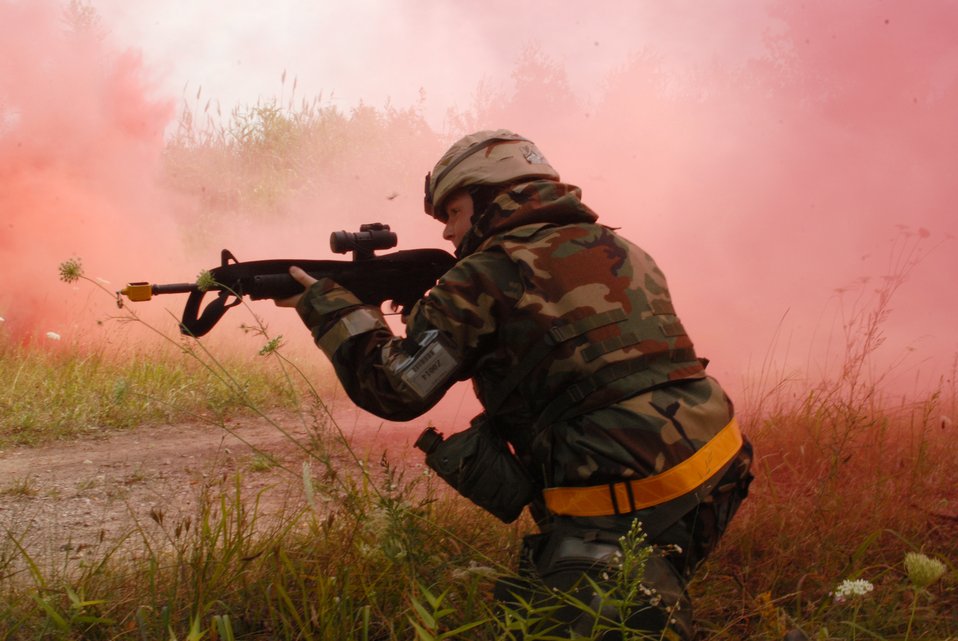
Don't come any closer...

Airman 1st Class Tara Zuber takes aim at an